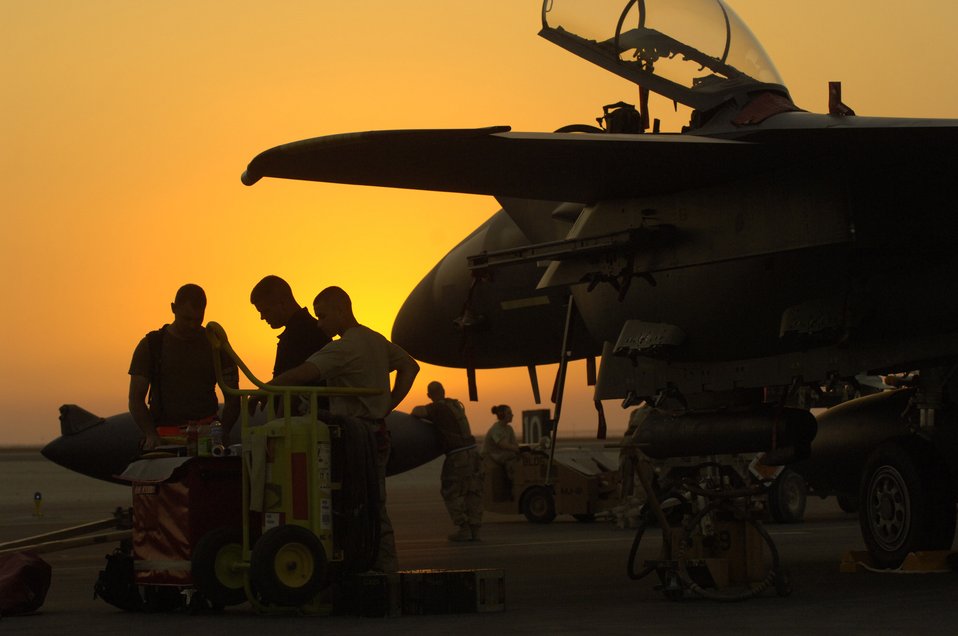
Strike Eagles have landed

Staff Sgt. Sean Tracey, Senior Airman Sean Timothy and Airman 1st Class Henry Rodriguez perform a post-flight inspection on an F-15 Strike Eagle at a forward-deployed base in Southwest Asia Sept. 21. The three F-15E crew chiefs are assigned to the 494th Aircraft Maintenance Unit.